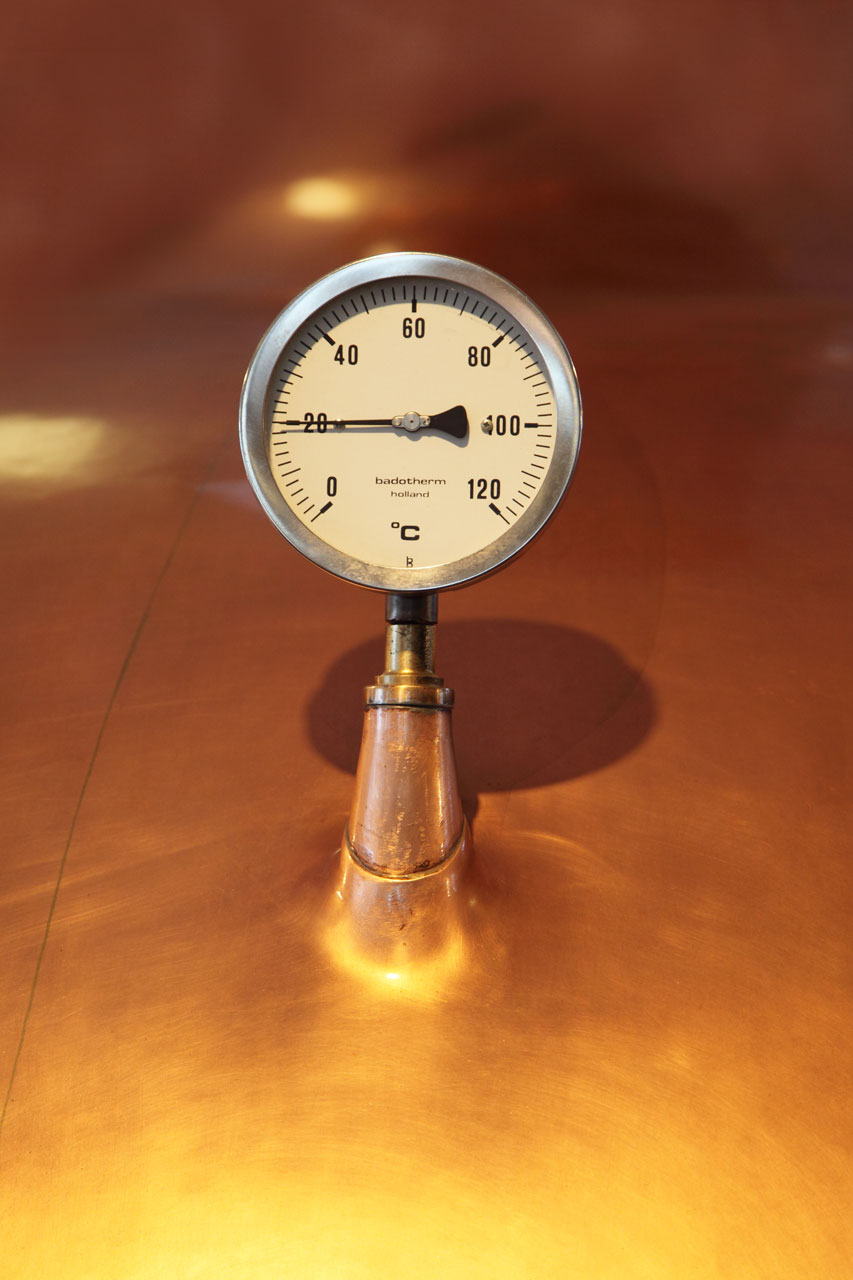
Industrial thermometer.